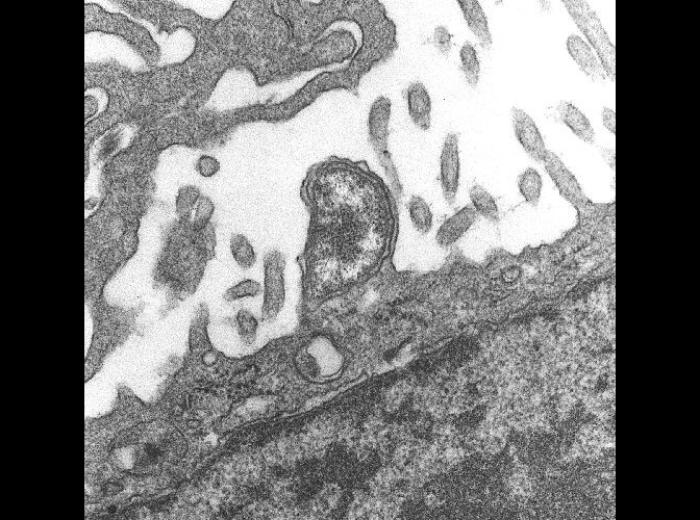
Rickettsia tsutsugamushi budding from mouse peritoneal mesothelial cell.